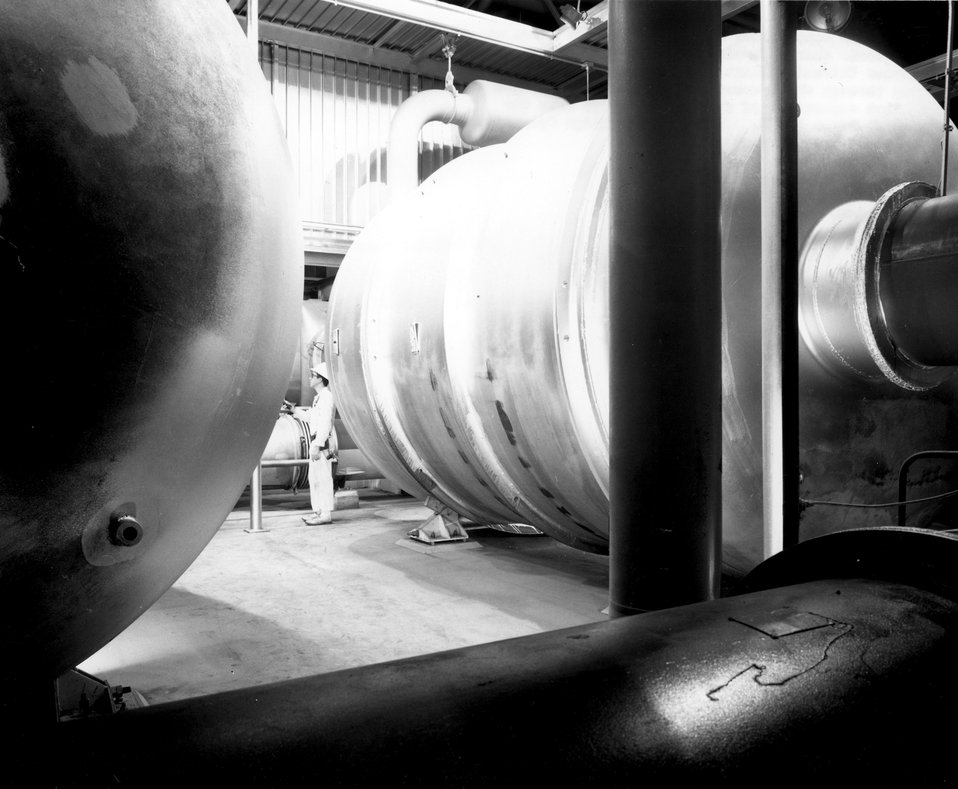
Large size compressors and converters are shown at the Atomic Energy Commission's Oak Ridge (Tenn.) Gaseous Diffusion Plant. Circa 1972.